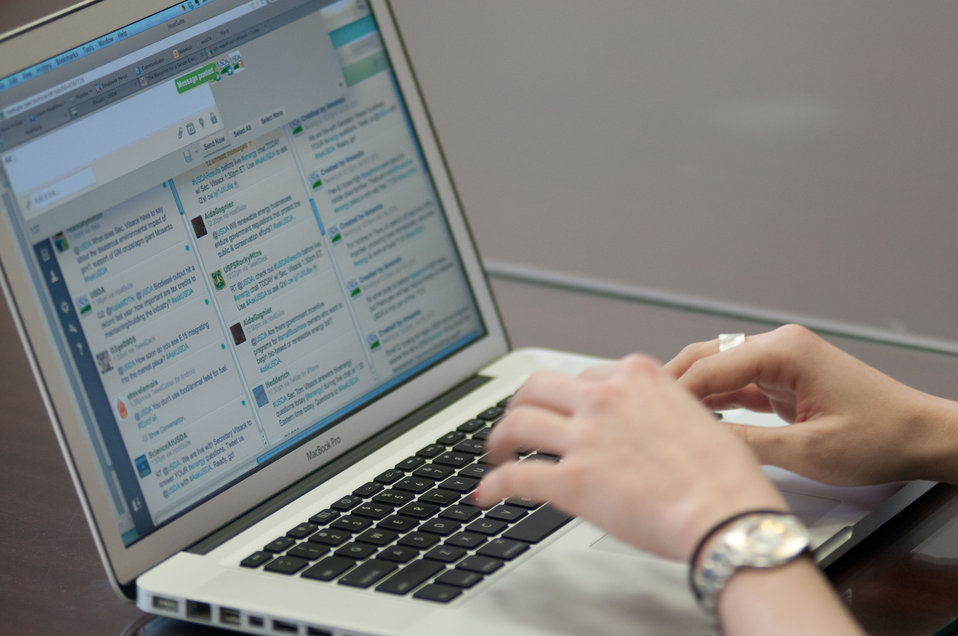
Agriculture Office of Communications, Director of Web Communications Amanda Eamich types responses for Agriculture Secretary Tom Vilsack, during the first Virtual Office hours live 'Twitter' session held at the U.S. Department of Agriculture in Washington, D.C., on Thursday, April 4, 2012.